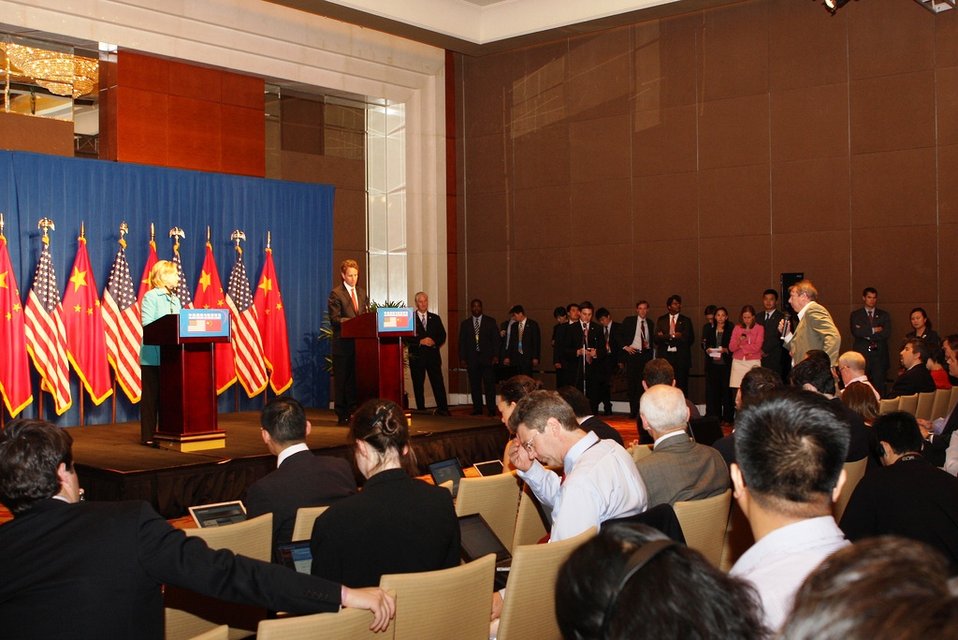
Secretary Clinton and Secretary Geithner Hold Joint Press Availability

U.S. Secretary of State Hillary Rodham Clinton and U.S. Secretary of the Treasury Timothy F. Geithner hold a joint press availability, in Beijing, China, following the conclusion of the U.S.-China Strategic and Economic Dialogue on May 25, 2010.